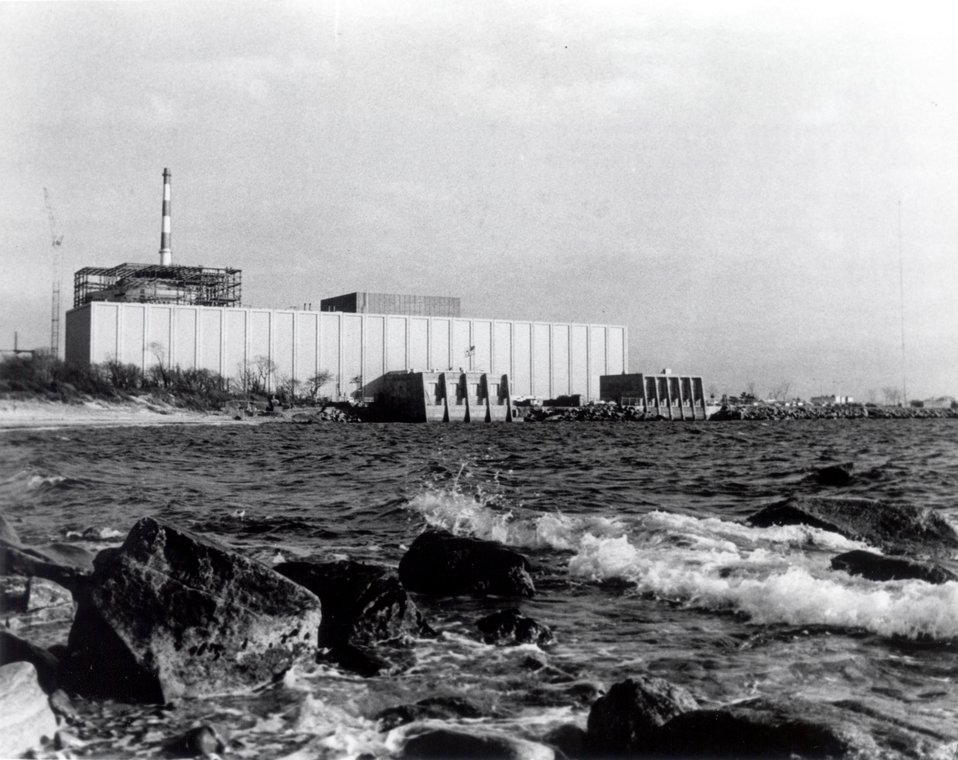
Millstone Nuclear Power Station, Units 1 and 2, located on Millstone Point on the edge of Long Island Sound at Waterford, CT.